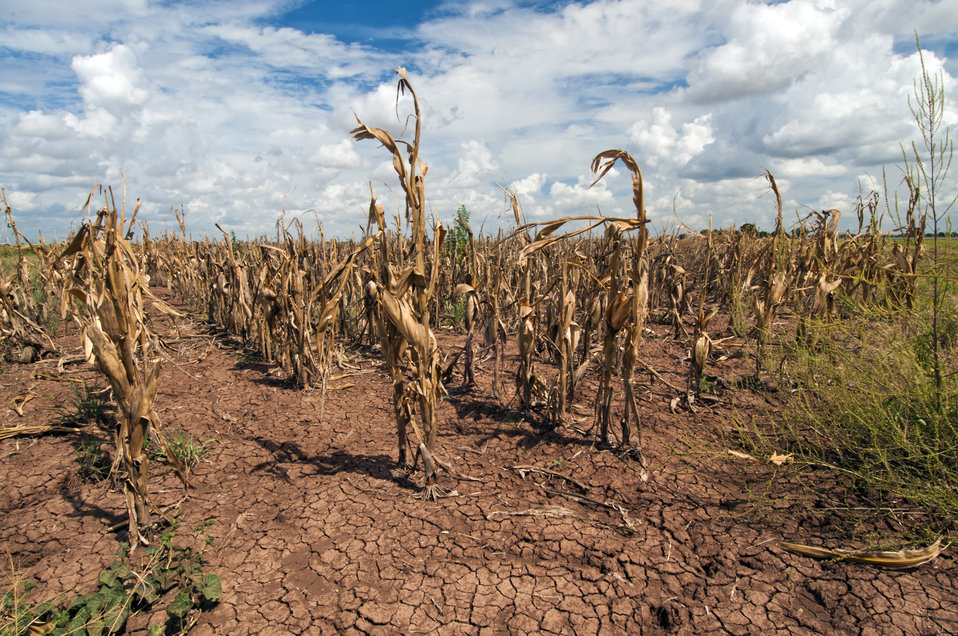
Corn shows the affect of drought in Texas on Aug. 20, 2013.